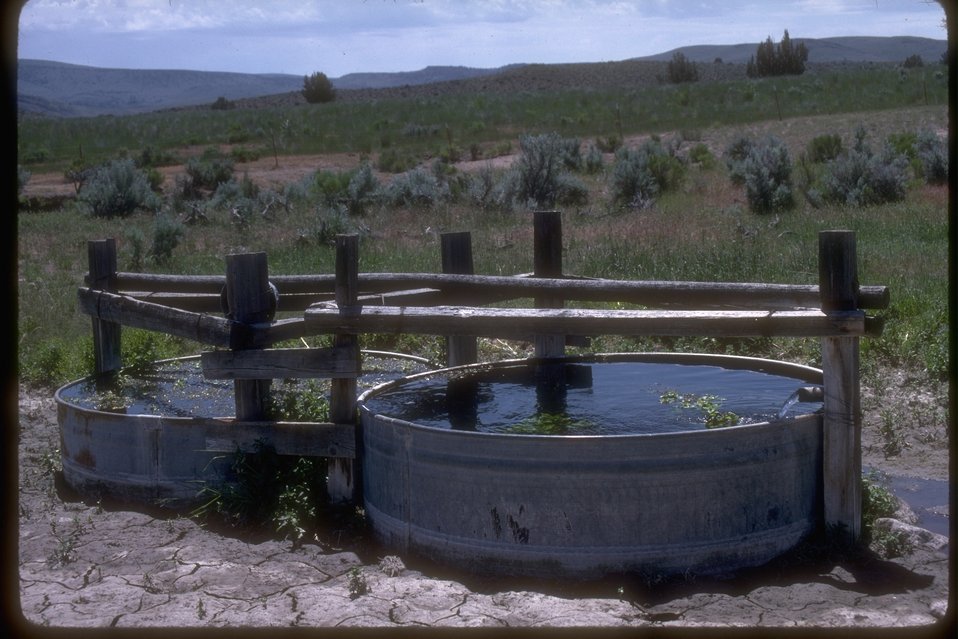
Cow drinking tank in the middle of rangeland.